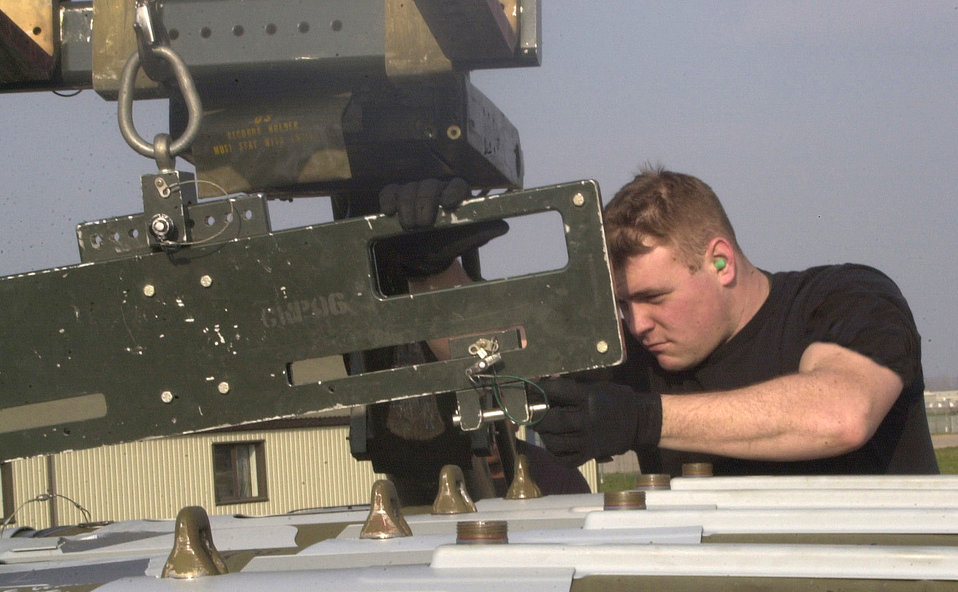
Murdock

OPERATION IRAQI FREEDOM -- Senior Airman Daniel Murdock, weapons loader, prepares a GBU-31 Joint Direct Attack Munition. Aircraft and people are deployed to this forward-deployed air base as part of the 457th Air Expeditionary Group.